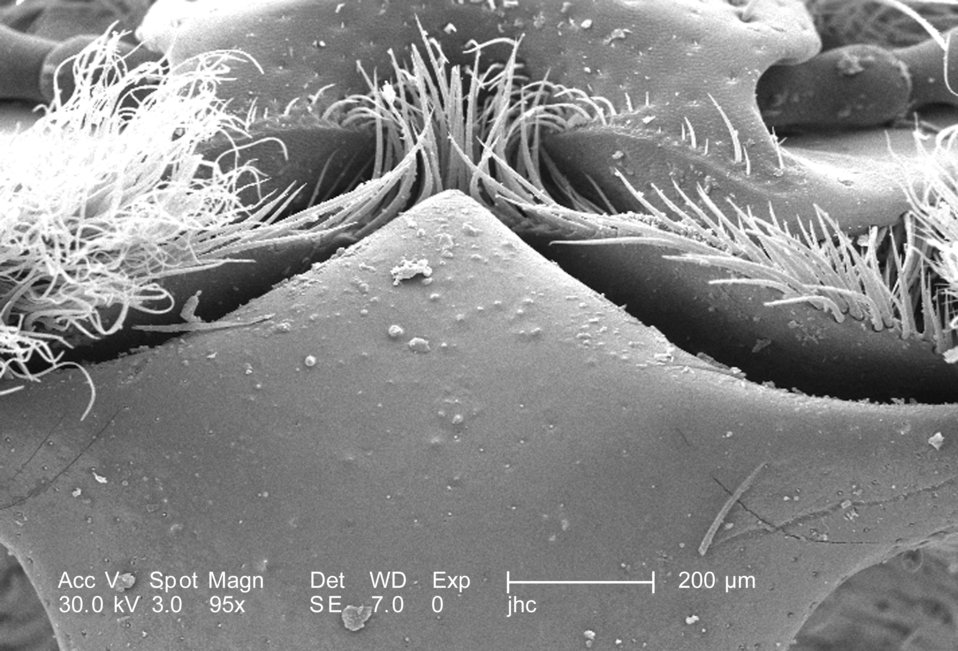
At a low magnification of 95X, this scanning electron micrograph (SEM) depicted some of the morphologic exoskeletal features located on the ventral thoracic surface of an adult 'figeater' beetle, Cotinis mutabilis. Sometimes referred to as a 'junebug, this insect is a member of the taxonomic family, Scarabaeidae, or dung beetles. In this particular image, you'll note the proximal jointed ends of this beetle's maxillary "galeae", which emanate from maxilla just medial to the insect's "palpi".It's due to the jointed nature of its leg configuration that this organism is classified in the phylum, Arthropoda, i.e., 'Arthro' = jointed, and 'poda' = legs. This beetle was found in the Decatur, Georgia suburbs.